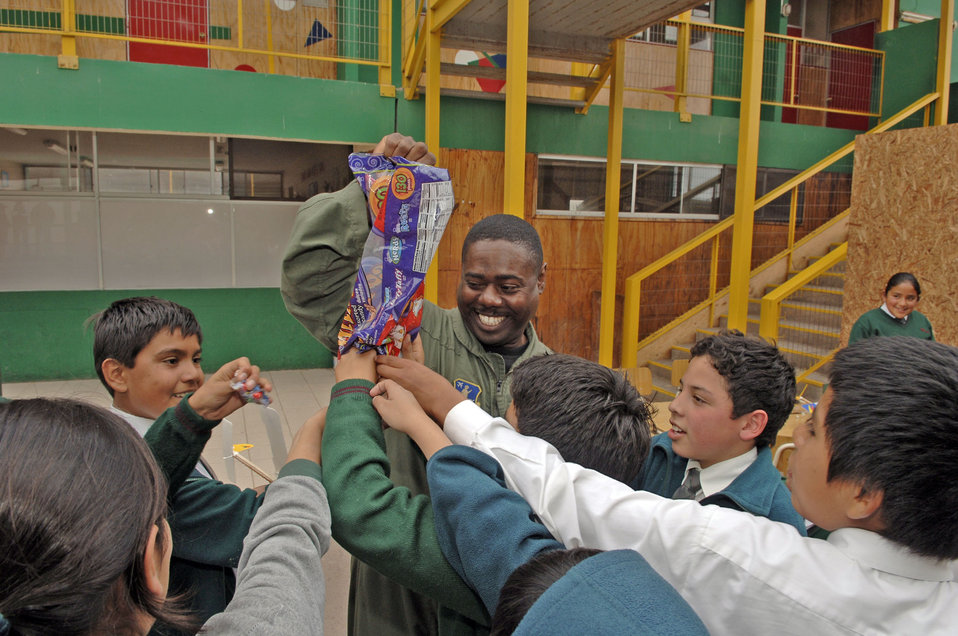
U.S., Chilean airmen visit school

Master Sgt. Vincent Jones hands out candy to sixth-grade students of Colegio Macaya during a joint U.S./Chilean air force visit to the school Oct. 27, 2009, in Alto Hospicia, Chile. Sergeant Jones is a 161st Air Refueling Wing boom operator.